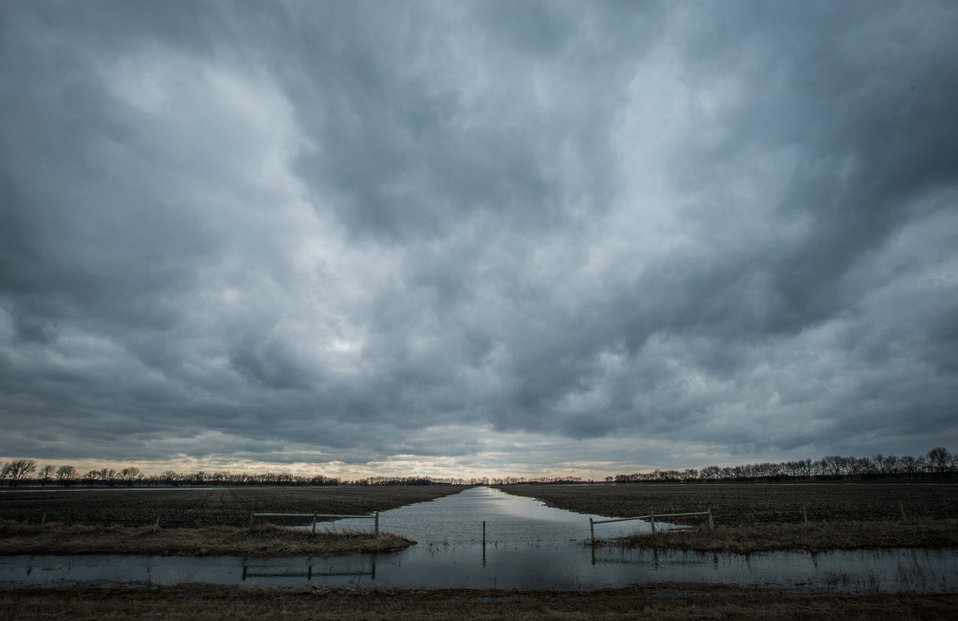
A snowstorm to the South East of the Red River basin, in North Dakota and Minnisota, on Wednesday, May 1, 2013. To learn about the Red River Basin Initiative, see www.mn.nrcs.usda.gov/news/features13/RRBI.html USDA Photo by Lance Cheung.